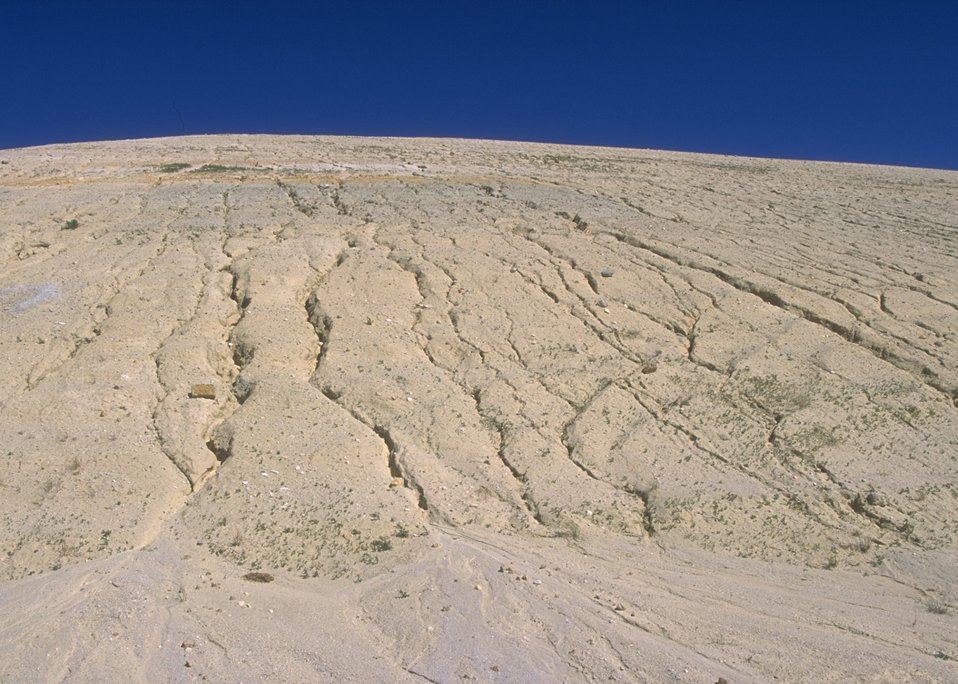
Gas Hill Abandoned Mine Lands in various stages of rehabilitation, Lander Field Office.